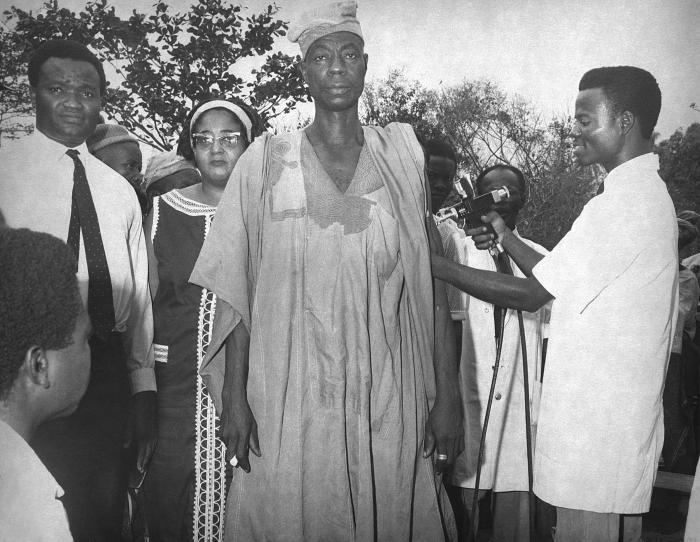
These were participants in the Smallpox Eradication Program in Ibadan, South Western Nigeria, 1968.